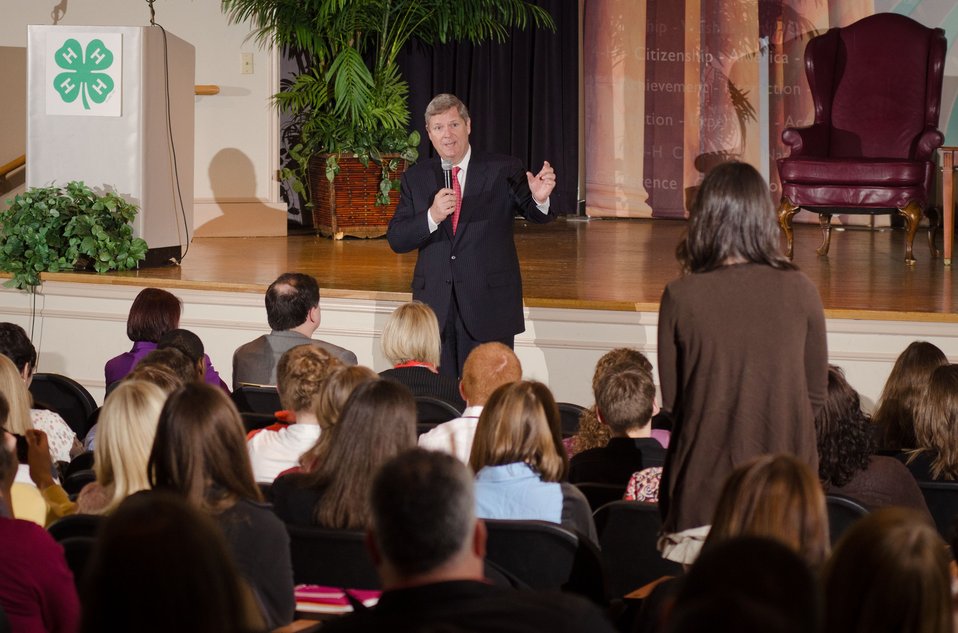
Agriculture Secretary Tom Vilsack speaks with 4-H members at the National 4-H Youth Center in Chevy Chase, MD, on Monday, March 26, 2012. 'For almost 100 years, USDA and 4-H have partnered to produce some of our nation's best and brightest, including farmers and ranchers who have supported the American economy and put food on our tables,' Vilsack said. 'You all are tomorrow's leaders. We need you to think big, innovate and help tackle the important challenges standing between us, a stronger middle class and a stronger nation.'